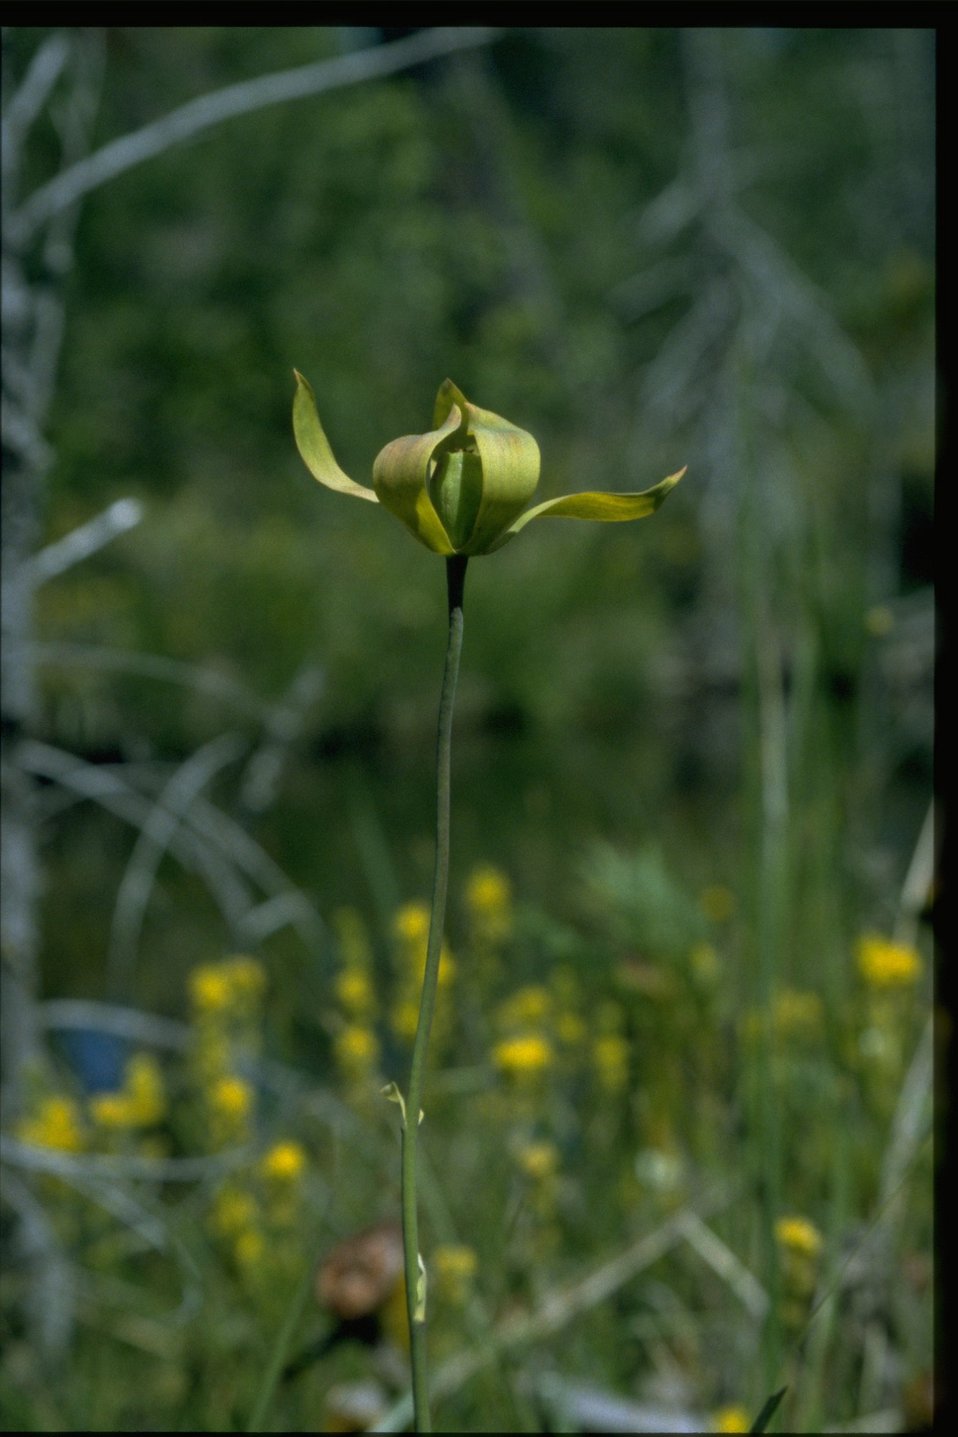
Medium shot of Cobra Lily flower, Darlingtonia californica.